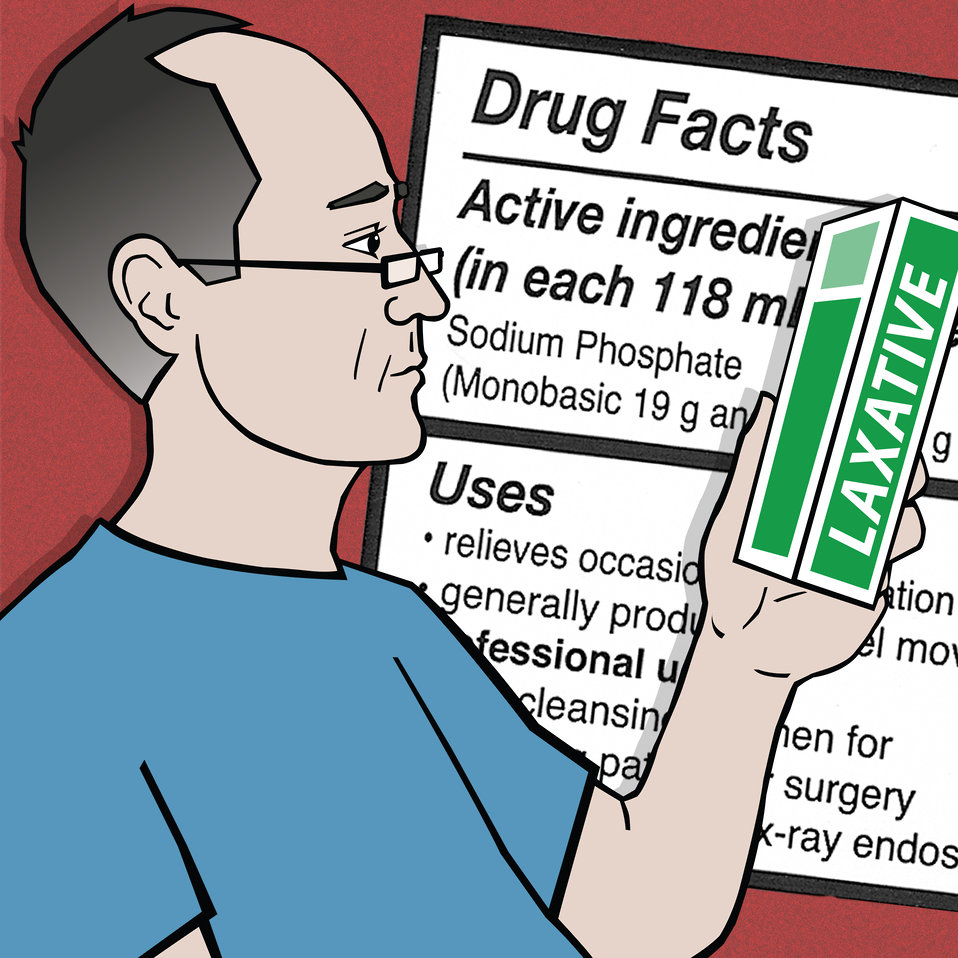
Laxatives: Use Caution

FDA is warning that some over-the-counter laxatives are potentially dangerous. Read this Consumer Update to find out who may be affected and why these laxatives may cause side effects or even death:

• Use Certain Laxatives with Caution

This graphic is free of all copyright restrictions and available for use and redistribution without permission. Credit to the U.S. Food and Drug Administration is appreciated but not required.